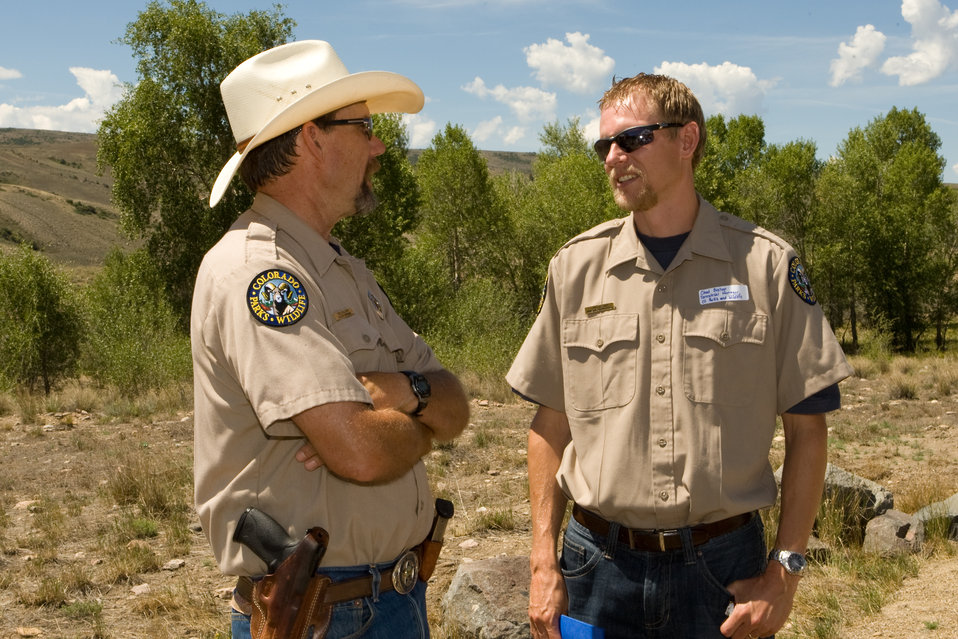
Colorado Rare Plant Conservation Initiative

The Colorado Rare Plant Conservation Initiative (RPCI) is a partnership of 23 statewide and regional agencies, private organizations, and academic institutions working to conserve 121 rare plants in Colorado. As part of these efforts the group developed the Colorado Rare Plant Conservation Strategy, developed Best Management Practices to reduce energy development impacts, addressed climate change, and developed focused strategies for the conservation of individual species at eight priority landscapes. The group has also worked to coordinate volunteer efforts for plant conservation across the state.